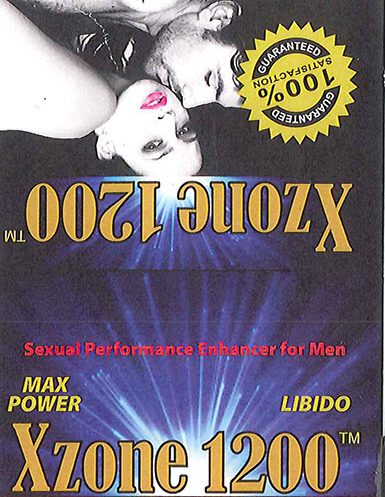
RECALLED – Dietary Supplement

April 1, 2014 – Product Recall – Nova Products, Inc. Issues Voluntary Nationwide Recall of Dietary Supplements with Undeclared Active Pharmaceutical Ingredients.